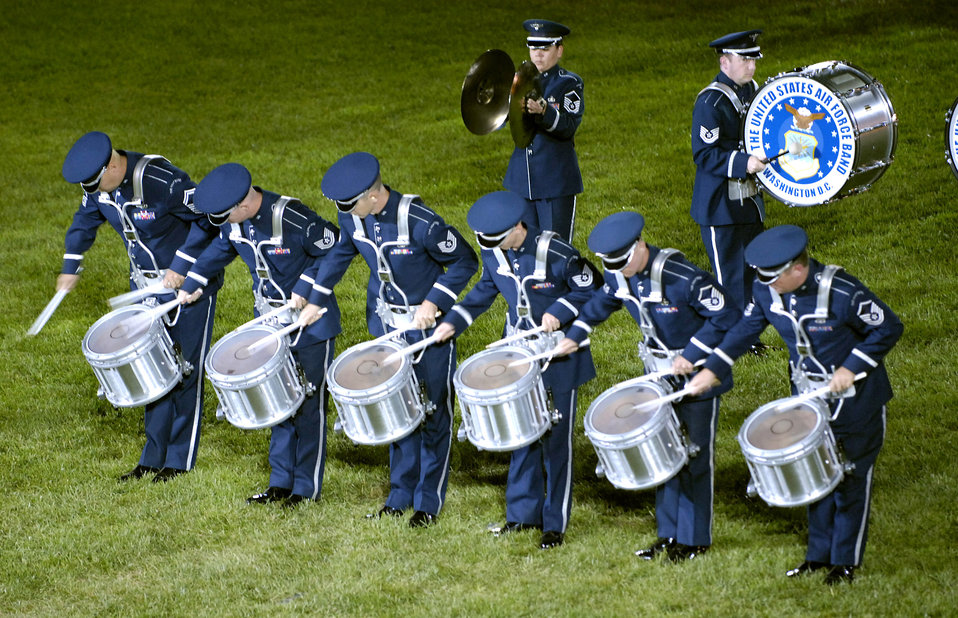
Marching to the beat

The Air Force Band drum line performs during the Air Force Tattoo Sept. 23 at Bolling Air Force Base, D.C. The event, titled